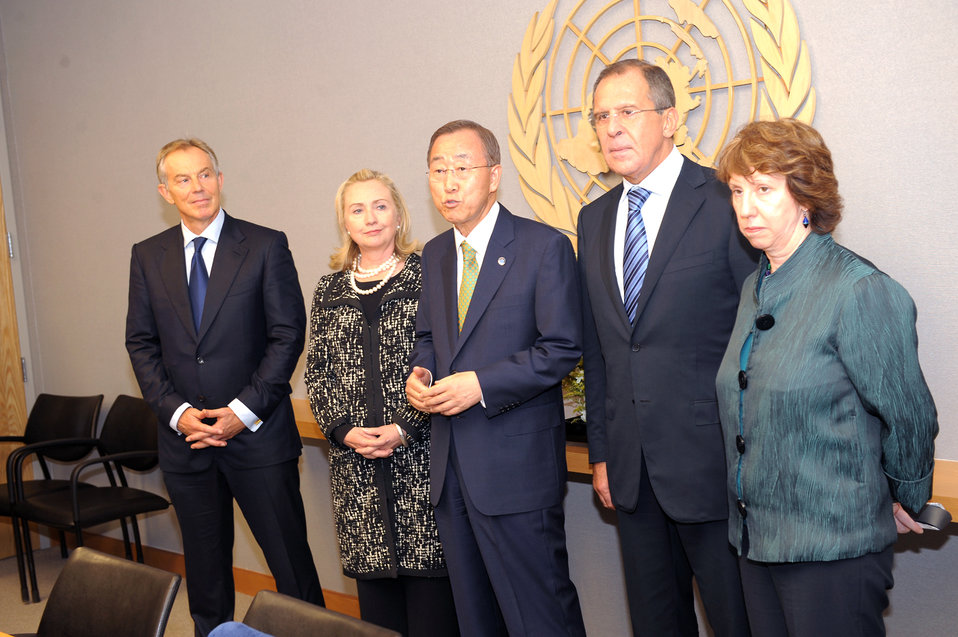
UN Quartet Envoy Blair, Secretary Clinton, Secretary General Ban Ki-moon, Russian Foreign Minister Lavrov, and EU High Representative Ashton Pose for a Photo

From left to right, UN Quartet Envoy Tony Blair, U.S. Secretary of State Hillary Rodham Clinton, UN Secretary General Ban Ki-moon, Russian Foreign Minister Sergei Lavrov, and EU High Representative for Foreign Affairs and Security Policy of the European Union Catherine Ashton pose for a photo after their Middle East Quartet in New York, New York, on September 23, 2011.